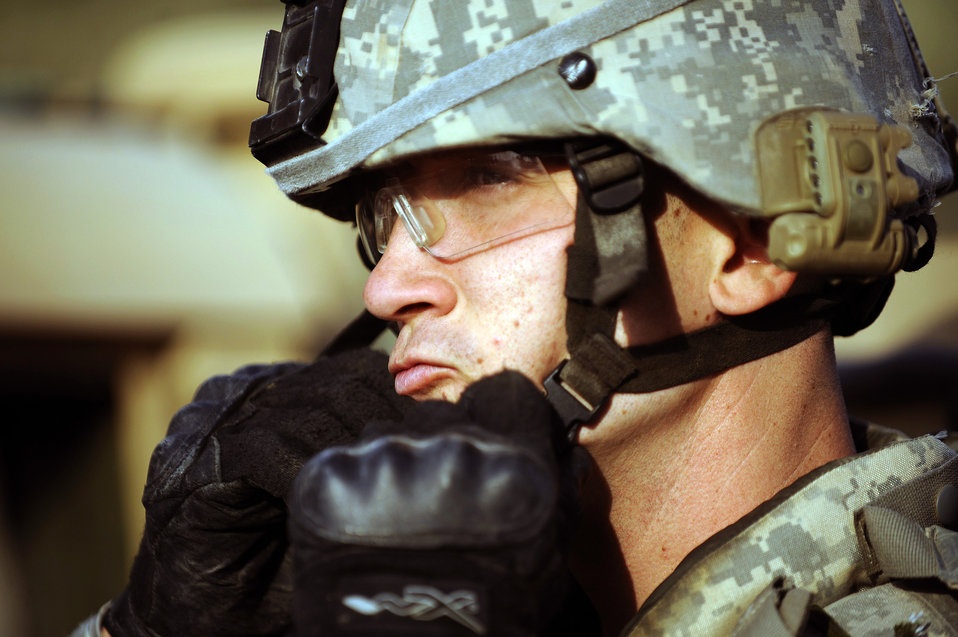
Airmen patrol outside to protect inside

Staff Sgt. Justin Rush secures his helmet prior to a force protection patrol Oct. 17, 2009, outside Joint Base Balad, Iraq. Members of the 532nd Expeditionary Security Forces Squadron patrol to provide a security presence intended to deter anyone who would do harm to the people who live and work at the base. Sergeant Rush is assigned to the 532nd ESFS.